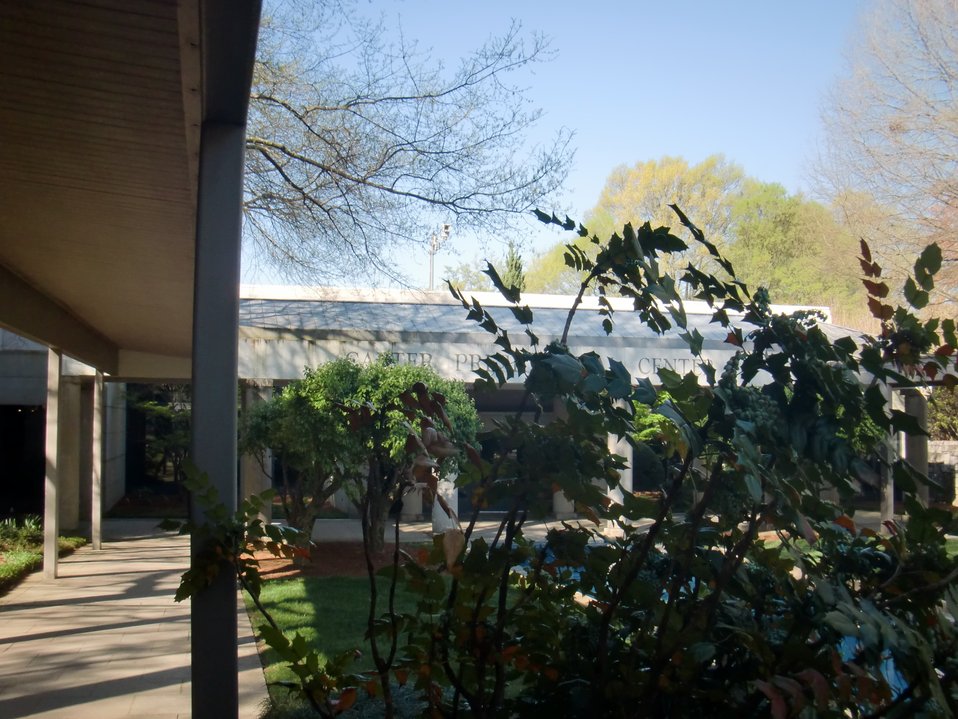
External shot of building; Location: Jimmy Carter Presidential Libray, Atlanta, GA